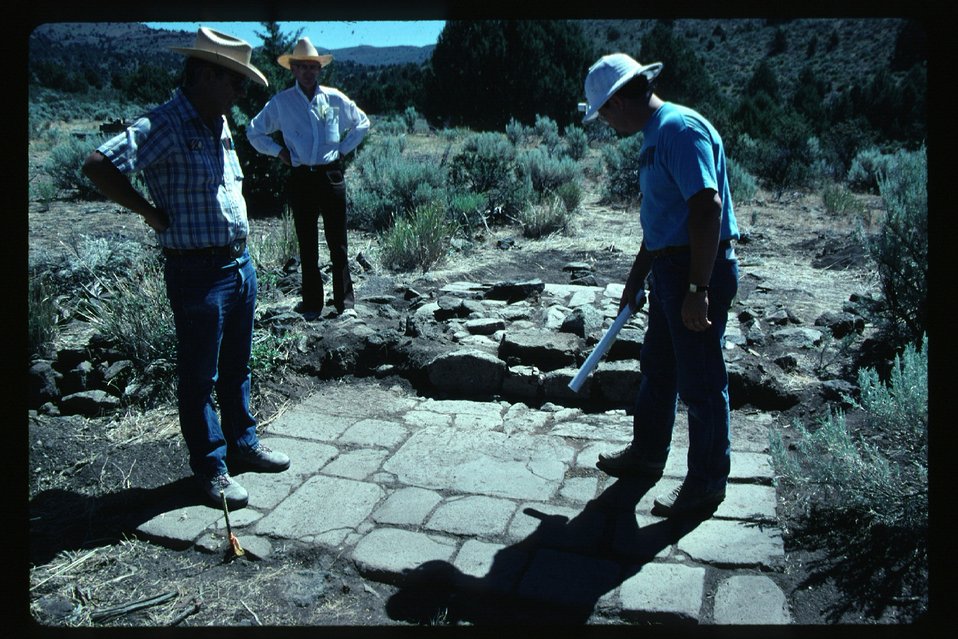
Old fire place Archeology LSRD Lower Snake River District